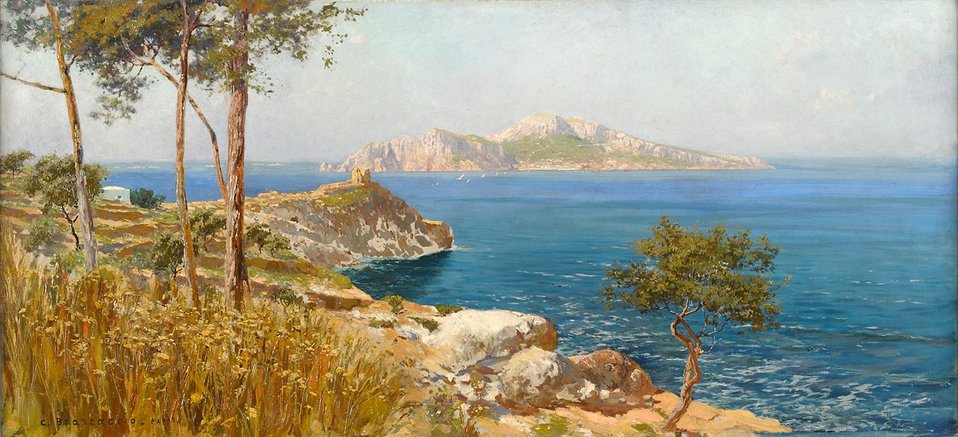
Carlo Brancaccio Ansicht von Capri